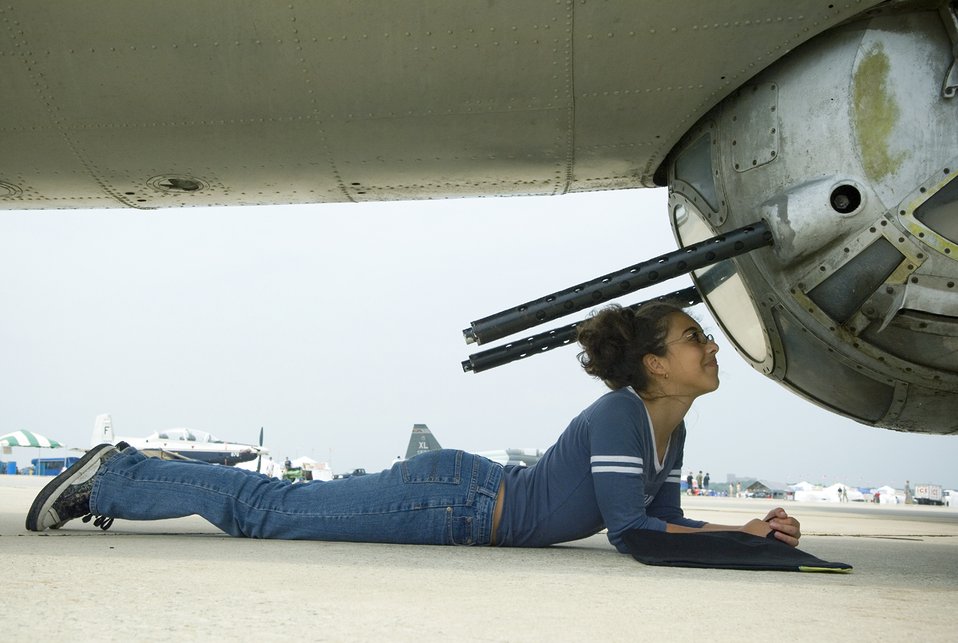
Sighting in

Lexi McGuirk gets a closer look at a B-17 Flying Fortress gun pod at the 2008 McGuire Air Expo May 31 at McGuire Air Force Base, N.J. Base officials hosted the air expo, which concluded Air Force Week in Philadelphia. Lexi, 11, of Clarks Summit, Pa., came to the airshow with her family to see all the military aircraft.